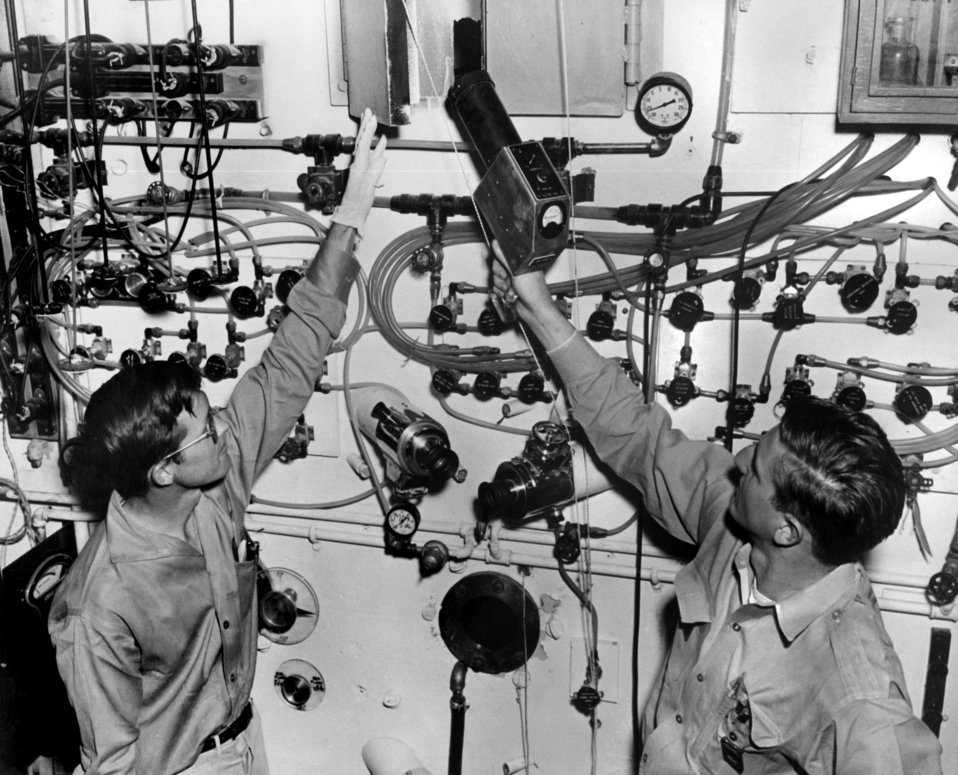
Health Physics Oak Ridge

5393-2 DOE photo E.M. Huff 2-23-1949 Oak Ridge Tennessee